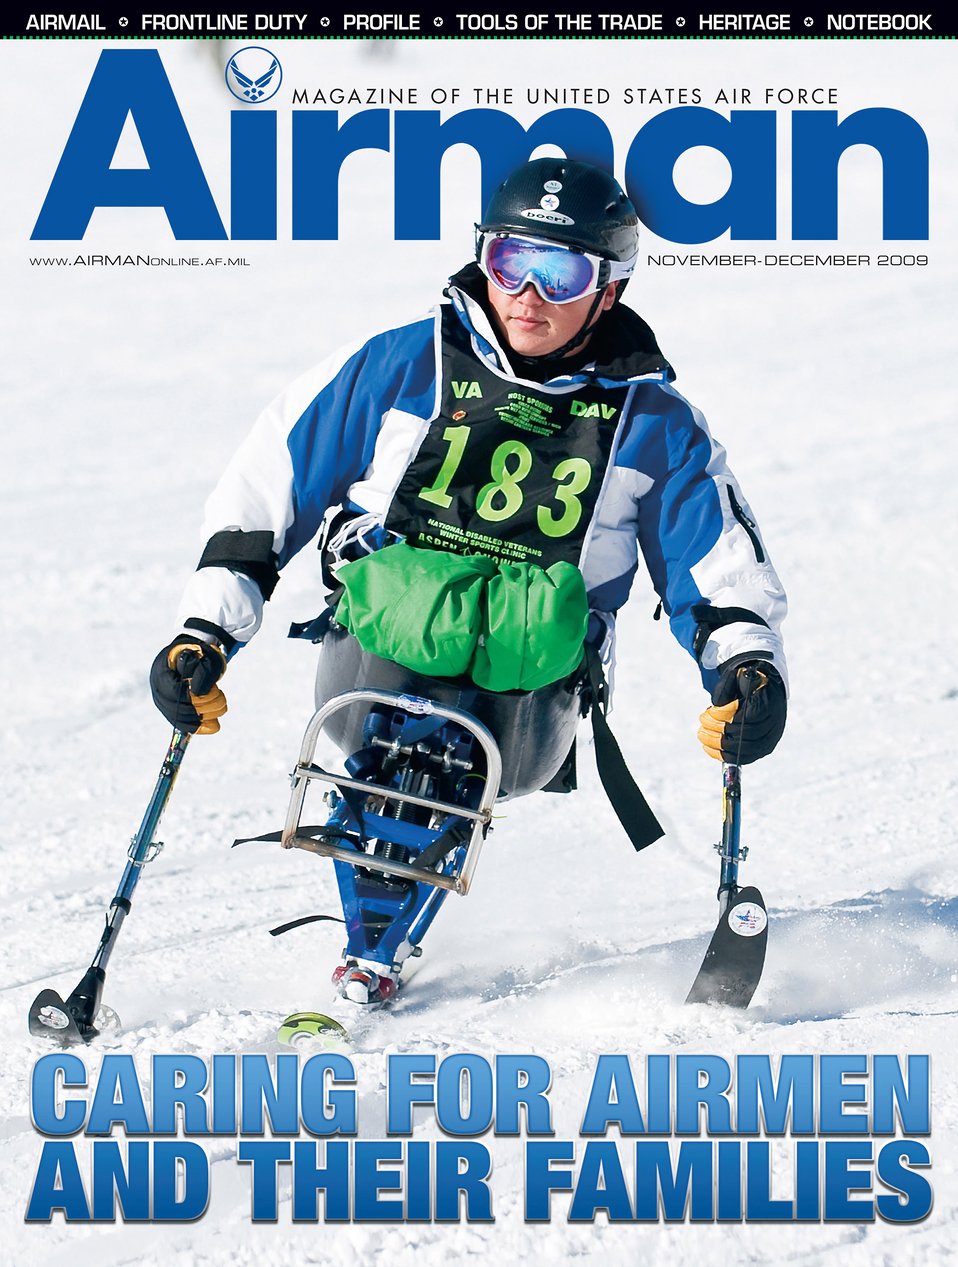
Latest issue of Airman magazine available

In this photo by Staff Sgt. Desiree Palacios, Senior Airman Kevin Krogh learned how to monoski during the National Disabled American Veterans Winter Games in Snowmass Village, Colo. The November/December 2009 issue of Airman, is now available in print and online at www.airmanonline.af.mil.